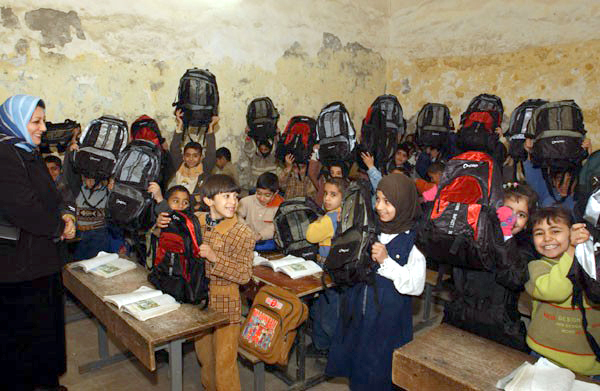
'Win the Peace' coalition delivers hope for future

NASIRIYA, Iraq -- Students from a local school open their backpacks recently donated by 380th Air Expeditionary Wing Airmen. More than 200 backpacks filled with school supplies and hygiene products were donated.